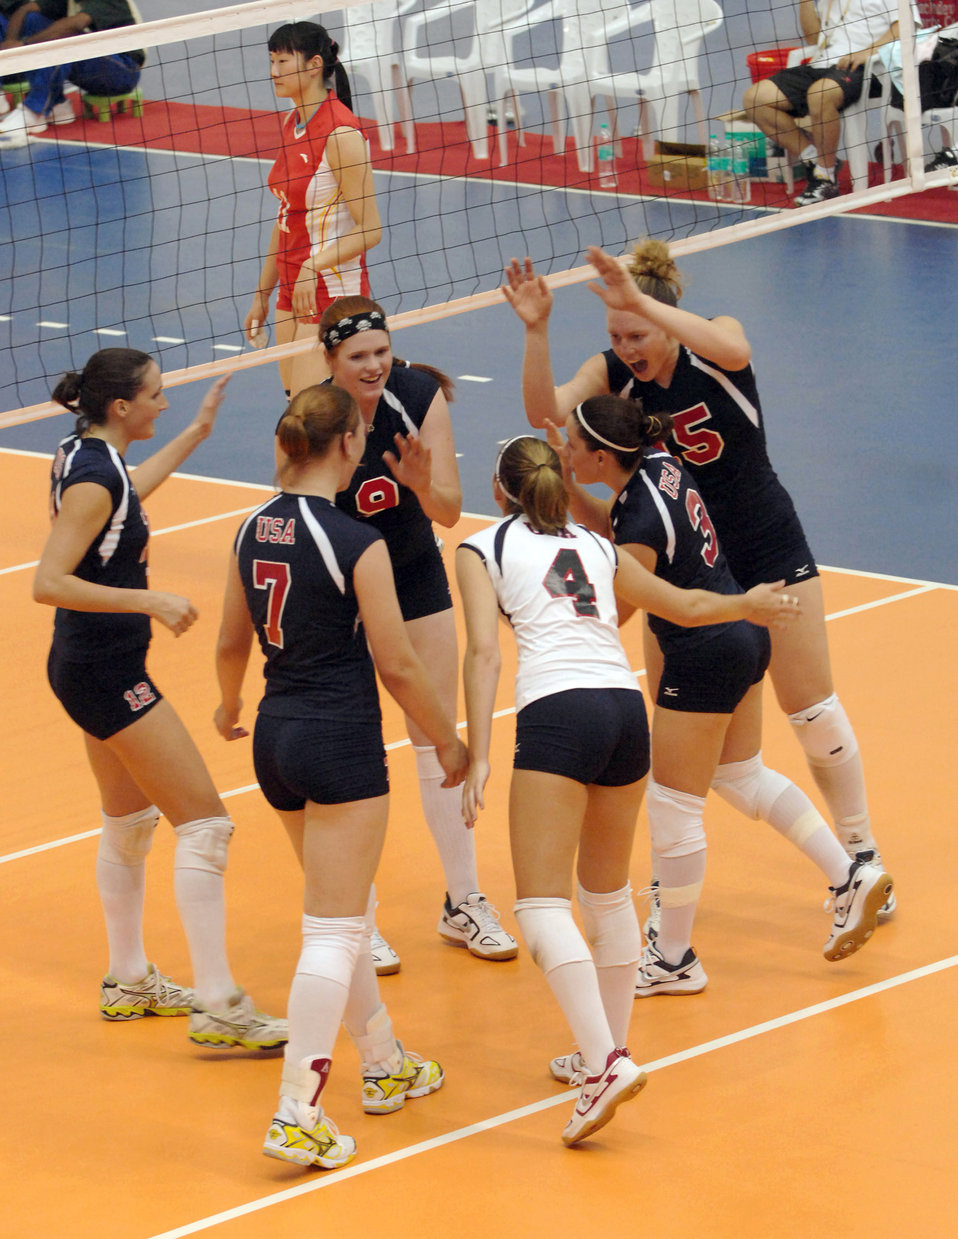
4th CISM World Military Games

The U.S. women' volleyball team celebrates a point during a match Oct. 14 against the Chinese team at the Military World Games in Hyderabad, India. The U.S. women fell to the Chinese team in three games, 25-15, 25-11, 25-7. The Conseil Internationale du Sport Militaire's Military World Games event is the largest international military Olympic-style event in the world. In this year's fourth edition of the Games, 103 countries and more than 5,000 athletes are competing Oct. 14 to 21 in boxing, diving, soccer, handball, judo, military pentathlon, parachuting, sailing, shooting, swimming, volleyball and track and field. The purpose of the Military World Games is to promote